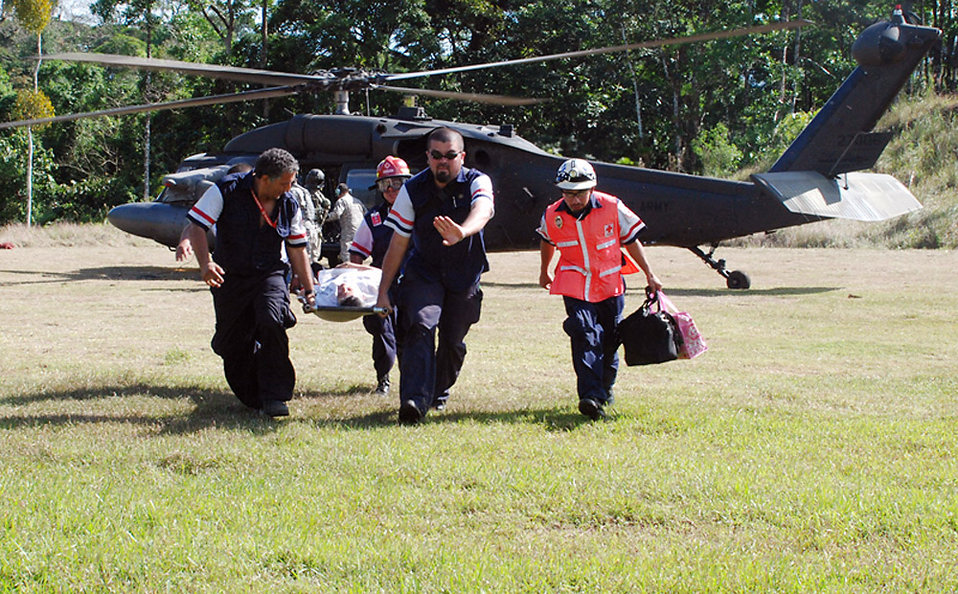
Servicemembers assist following earthquake in Costa Rica

Members of the Costa Rican Red Cross transport a 65-year-old female earthquake victim here from a Joint Task Force-Bravo helicopter to a waiting ambulance Jan. 10 in San Miguel, Costa Rica. Four JTF-Bravo helicopters and 34 American servicemembers deployed from Soto Cano Air Base, Honduras, at the request of the Costa Rican government to provide lifesaving support to those affected by the earthquake.